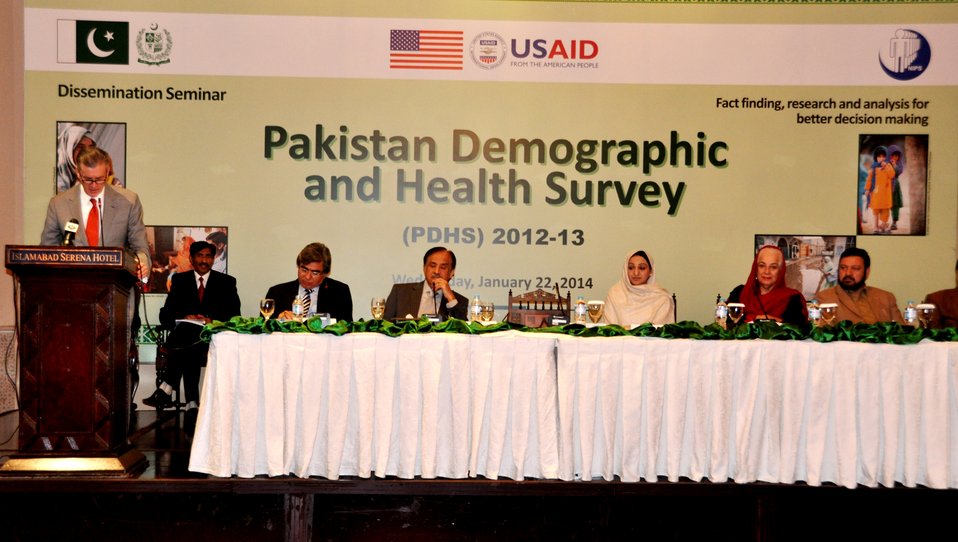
PDHS Launch

Ambassador Olson addressing at the launch of Pakistan Demographic and Health Survey 2012-13 on January 22, 2014